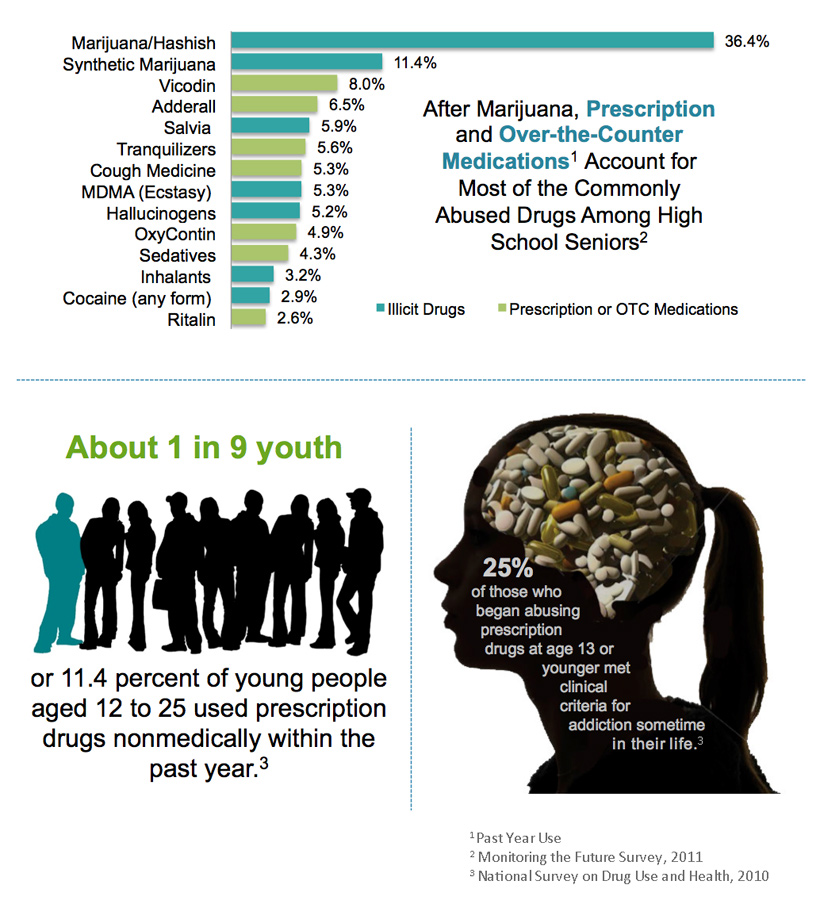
Prescription Drug Abuse: Young People at Risk

Text Description of Infographic

Top Graph: Past Year Drug Abuse Among High School Seniors Graph. After marijuana, prescription and over-the-counter medications account for most of the past-year use of commonly abused drugs among high school seniors. Data for past-year use of prescription and over-the-counter medicines include the following: Vicodin (8%), Adderall (6.5%), Salvia (5.9%), Tranquilizers (5.6%), Cough Medicine (5.3%), OxyContin (4.9%), Sedatives (4/3%), and Ritalin (2.6%), a combined total of 37.2%. Data for past-year use of illicit drugs includes the following: Marijuana/Hashish (36.4%), Synthetic Marijuana (11.4%), Salvia (5.9%), MDMA (Ecstasy 5.3%), Hallucinogens (5.2%), Inhalants (3.2%), and Cocaine (any form, 2.9 %).

Bottom Left Image. About 1 in 9 youth or 11.4 percent of young people aged 12 to 25 used prescription drugs nonmedically within the past year. (National Survey on Drug Use and Health, 2010)

Bottom Right Graphic. Twenty-five percent of those who began abusing prescription drugs at age 13 or younger met clinical criteria for addiction sometime in their life. (National Survey on Drug Use and Health, 2010)